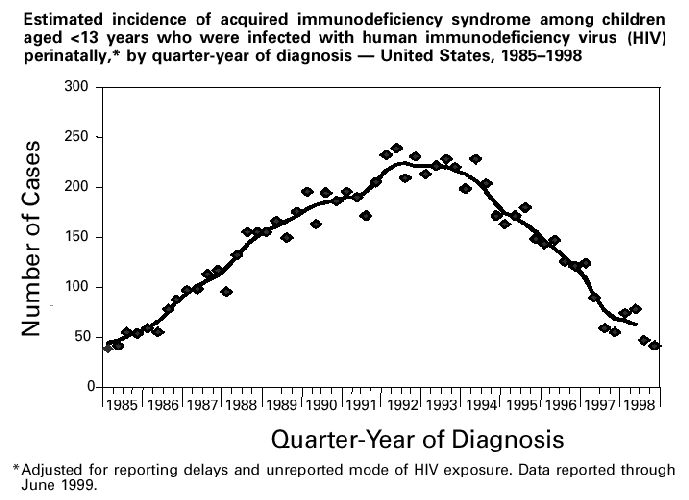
Incidence of AIDS among children who were infected with HIV perinatally--United States, 1985-1998.